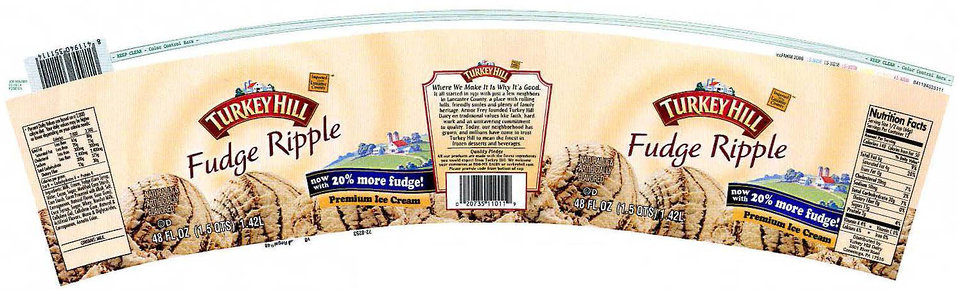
RECALLED – Ice Cream

October 4, 2013 – Product Recall – Turkey Hill Dairy Issues Voluntary Recall of Chocolate Peanut Butter Cup Premium Ice Cream,Fudge Ripple Premium Ice Cream, and Moose Tracks Stuff’d Frozen Dairy Dessert.